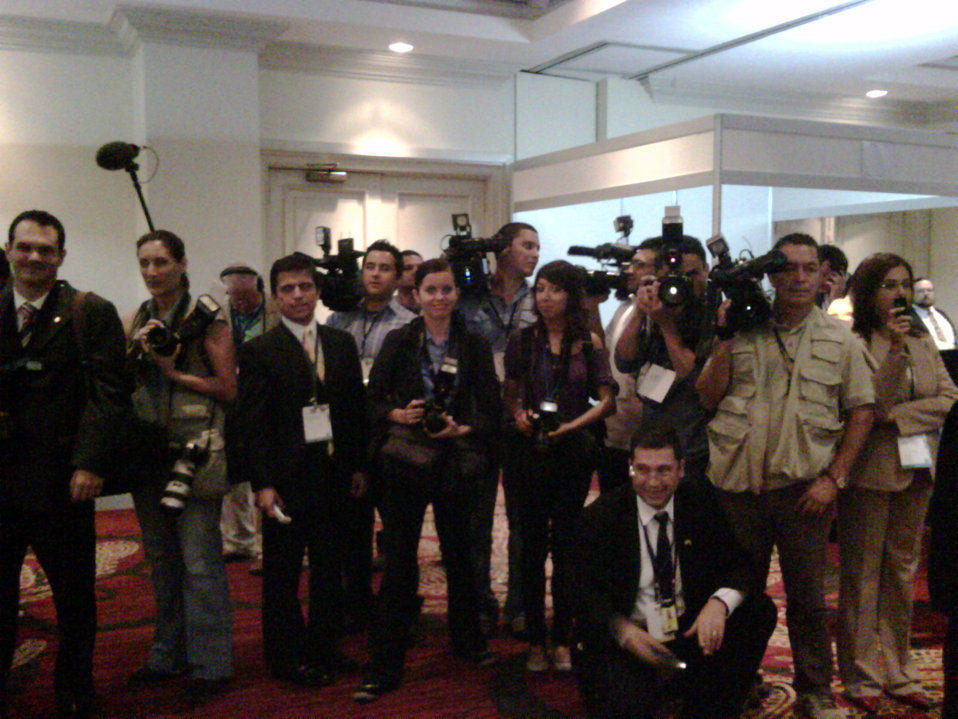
Behind the Scenes: Press at Pathways to Prosperity Conference

Members of the press await U.S. Secretary of State Hillary Rodham Clinton at the Pathways to Prosperity conference iin San Jose, Costa Rica, March 4, 2010.